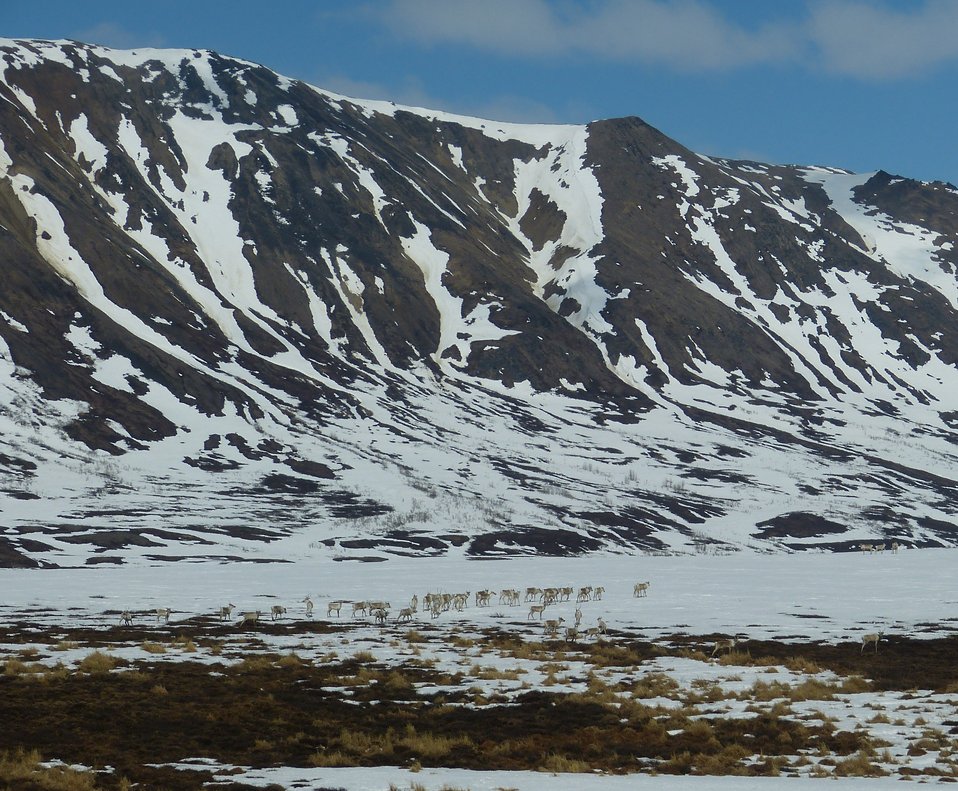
Caribou in Kilbuck Mountains on Yukon Delta National Wildlife Refuge

Photo credit: Kristine Sowl
USFWS, Yukon Delta National Wildlife Refuge